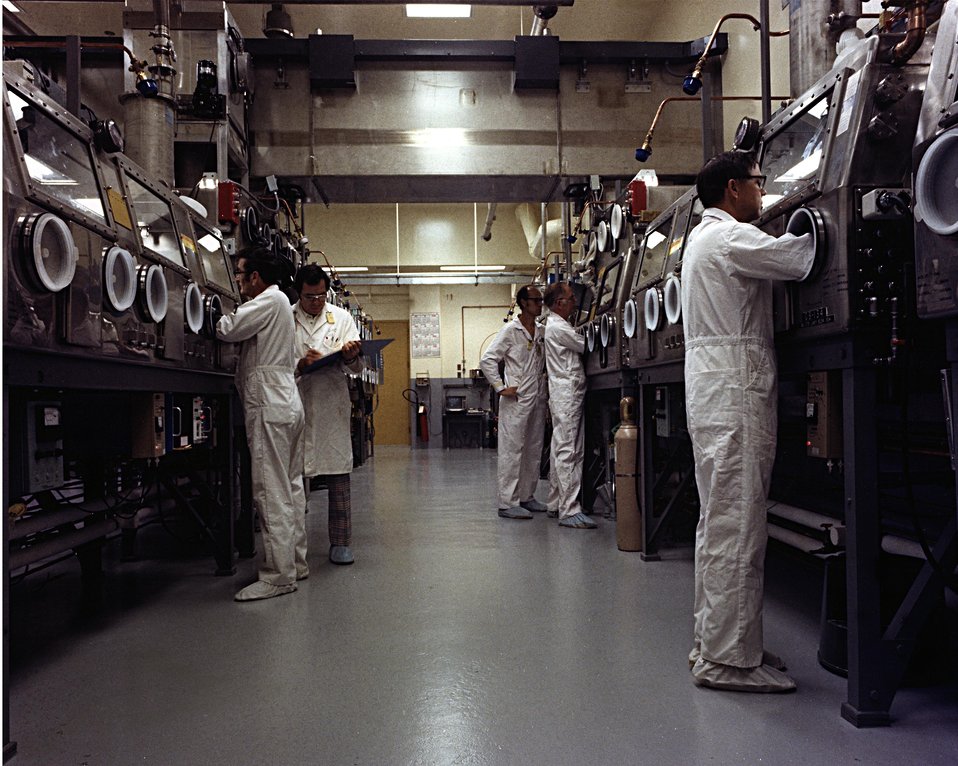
VIEW OF THE GLOVE BOX ROOM.

THE PLUTONIUM FACILITIES AT THE TA-55 AT LANL ARE USED FOR WORK ON THE TWO MAJOR ISOTOPES, PU-239 AND PU-238, OF THE MAN-MADE ELEMENT PLUTONIUM. TA-55 PROGRAMS HAVE ENCOMPASSED MANY PHASES OF PLUTONIUM RESEARCH AND DEVELOPMENT. OPERATIONS BEGAN IN APRIL, 1978.